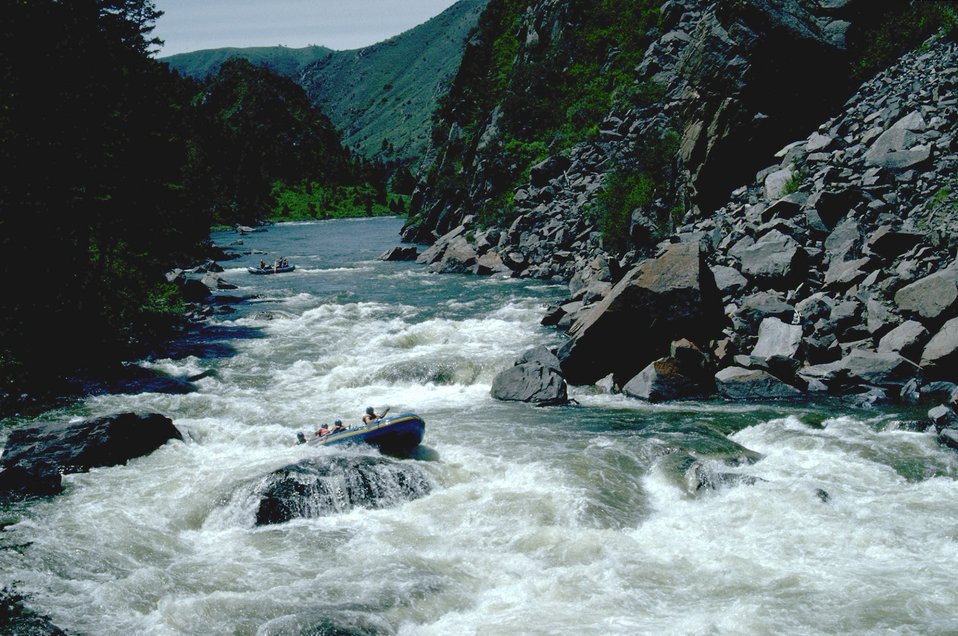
Bear Trap and Kitchen Sink Rapids